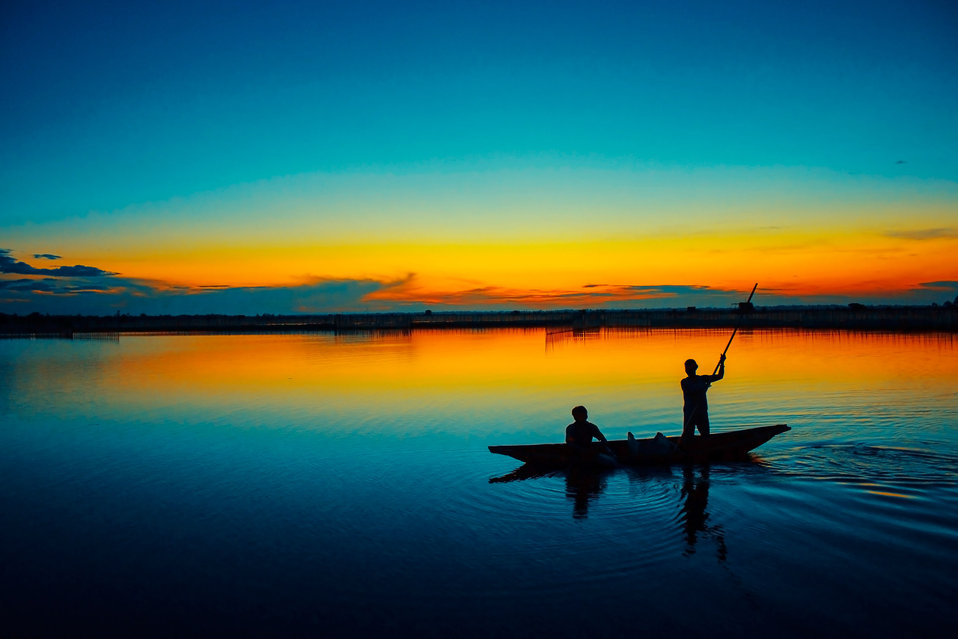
Dawn

A couple of fishermen are fishing in a lagoon in hue province, vietnam..